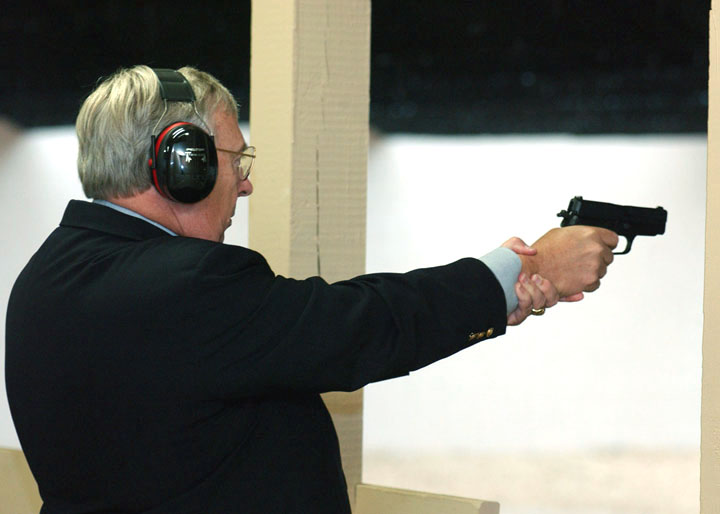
Taking aim

ANDREWS AIR FORCE BASE, Md. -- Secretary of the Air Force Dr. James G. Roche fires a 9 mm pistol during training at the firing range here Oct. 27.